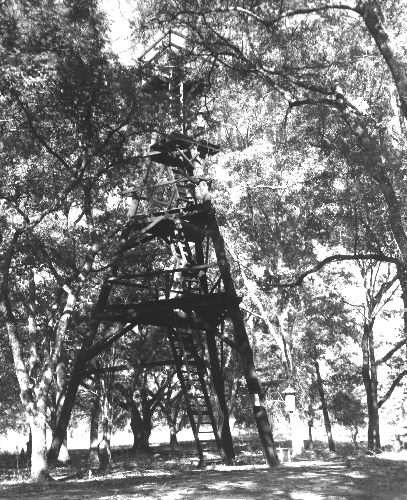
Newton Field Station